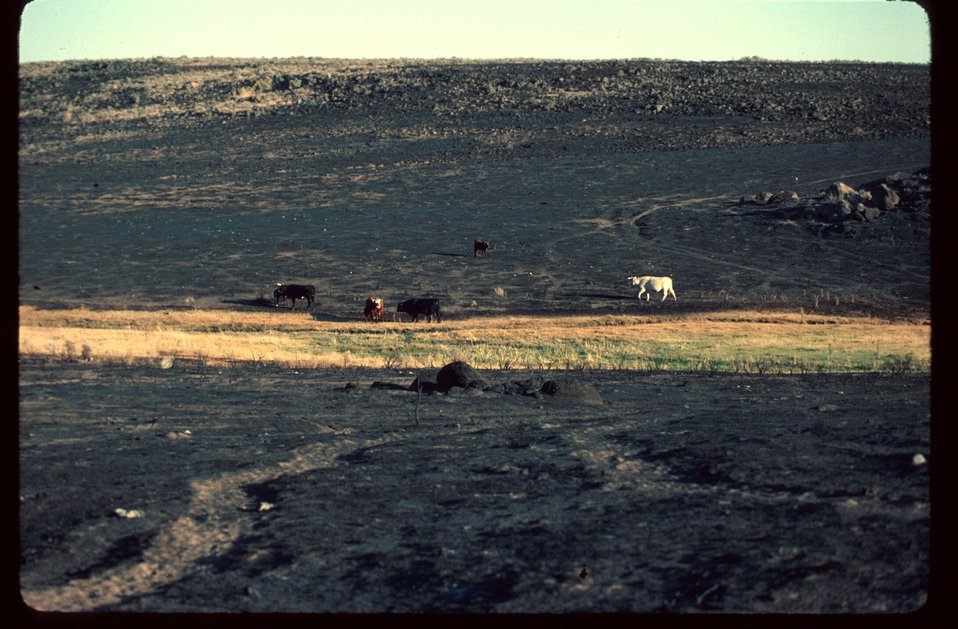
Thorn Creek Fire Fire Range Restoration Project